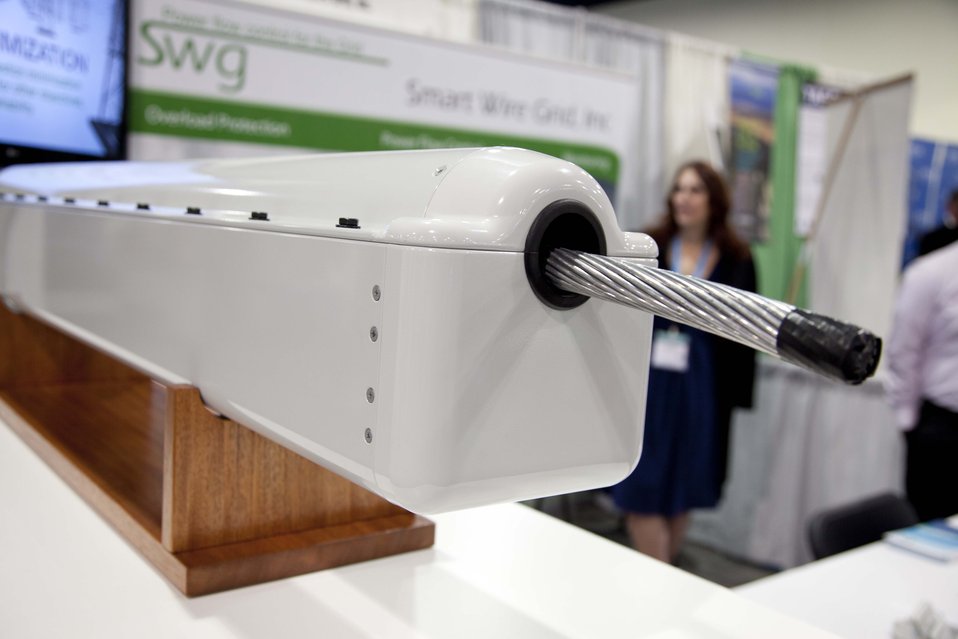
Pictured here is Smart Wire Grid’s innovative power flow control technology. Supported by ARPA-E funding, Smart Wire Grid developed modules that can be attached to existing transmission lines to better manage the flow of electricity. The company’s technology was sold commercially to Southern Company, a utility.